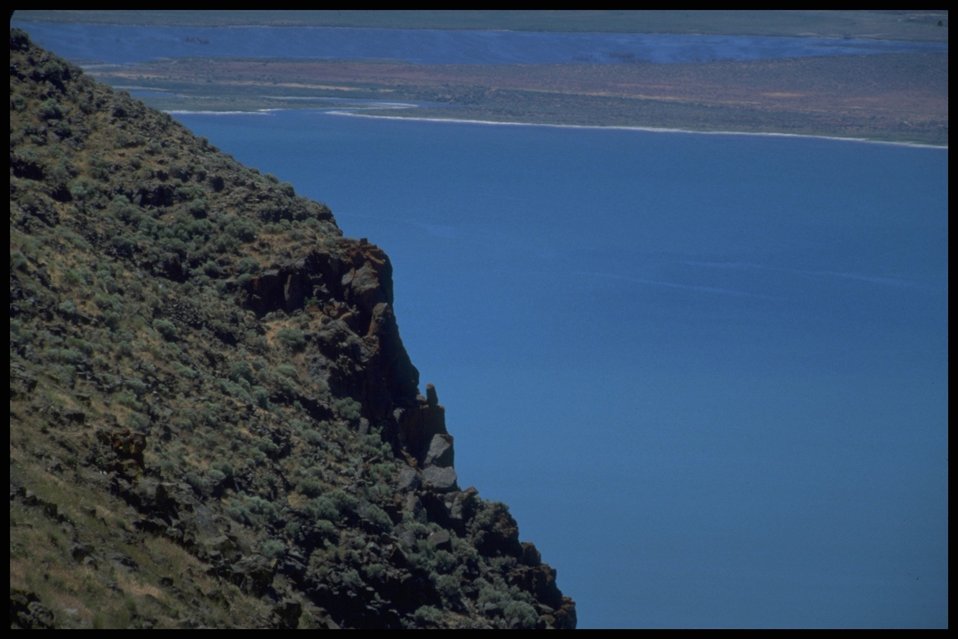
Lake Abert, Lakeview District.